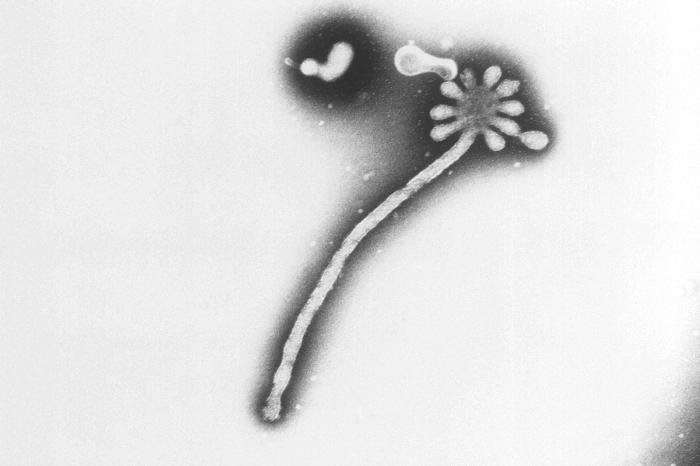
Created by CDC microbiologists Charles Humphrey and Anthony Sanchez, this negatively-stained transmission electron micrograph (TEM) revealed some of the ultrastructural morphologic features displayed by an Ebola virion discovered from the Ivory Coast of Africa.